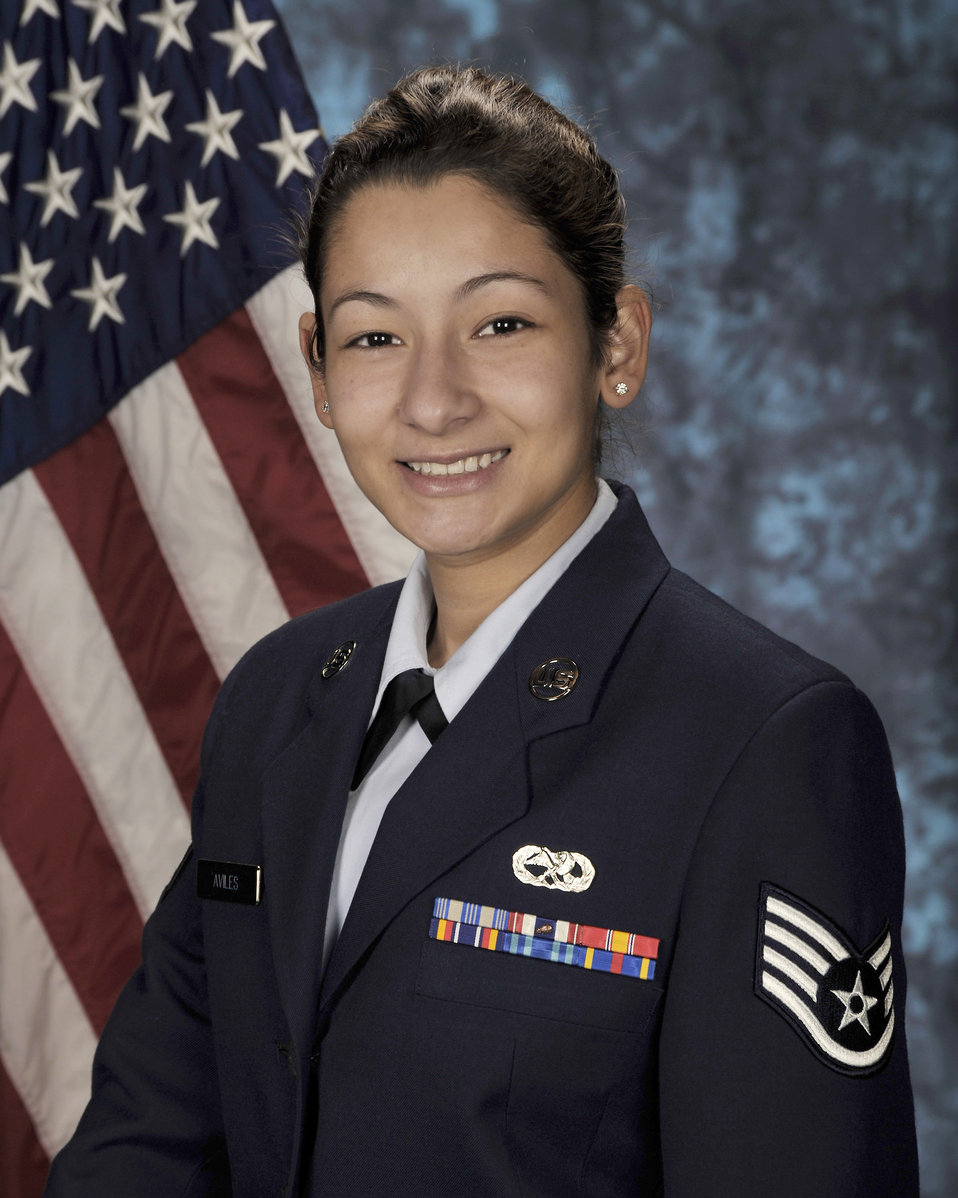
12 Outstanding Airmen of the Year named

Staff Sgt. Johanna Aviles, a network operations technician assigned to the West Coast Communications Support Element at Los Angeles Air Force Base, Calif., monitored homeland unmanned aircraft system missions during the California wildfires where more than 72 fires were identified and contained. The 12 Outstanding Airmen of the Year are selected based on superior leadership, job performance, significant self-improvement/ personal achievements and base/community involvement. The Air Force Chief of Staff reviews the selections. The selections for the 2009 12 Outstanding Airmen of the Year were announced July 2 by Air Force officials at Randolph Air Force Base, Texas.